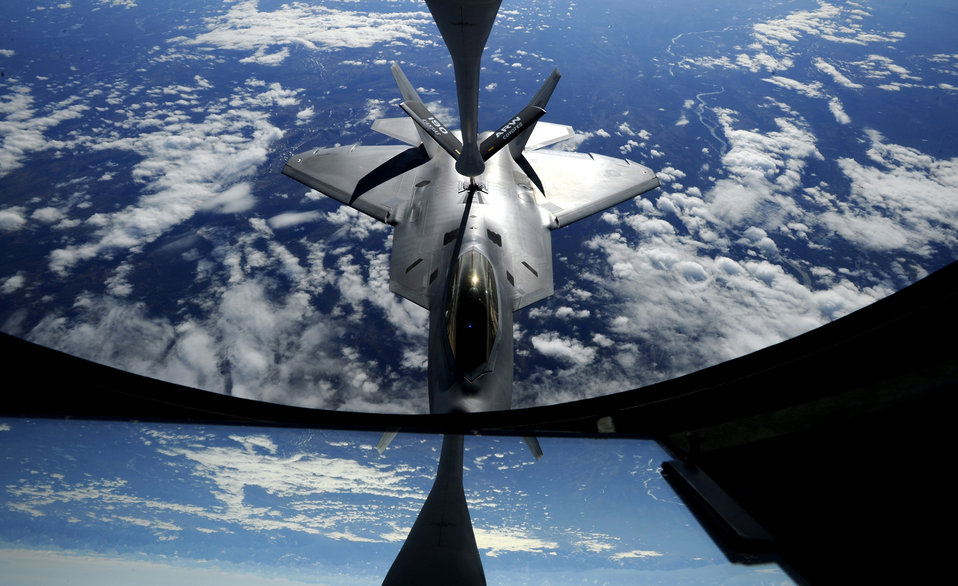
Fighters refuel over Alaska

An F-22 Raptor from Elmendorf Air Force Base, Alaska, receives fuel from a KC-135 Stratotanker from the Kansas Air National Guard's 190th Air Refueling Wing May 26, 2010. The refueling took place over Alaska.